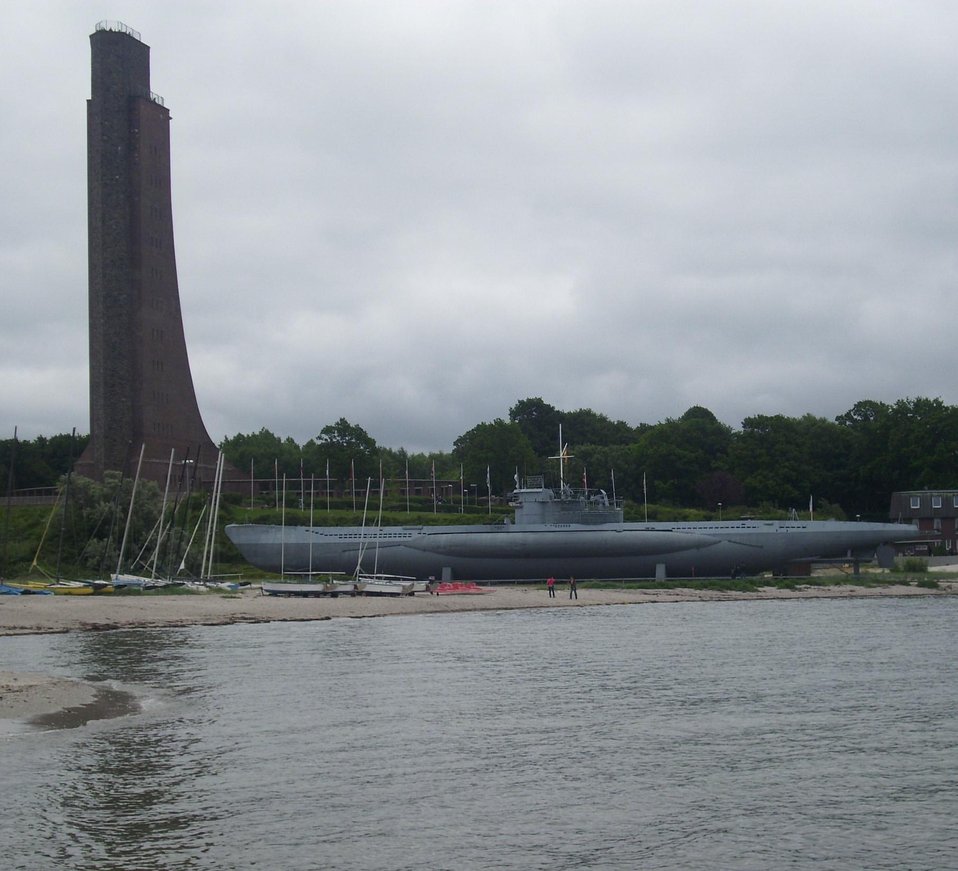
Deutsch: U 995 vor dem Marine-Ehrenmal Laboe von der Fördeseite aus gesehen